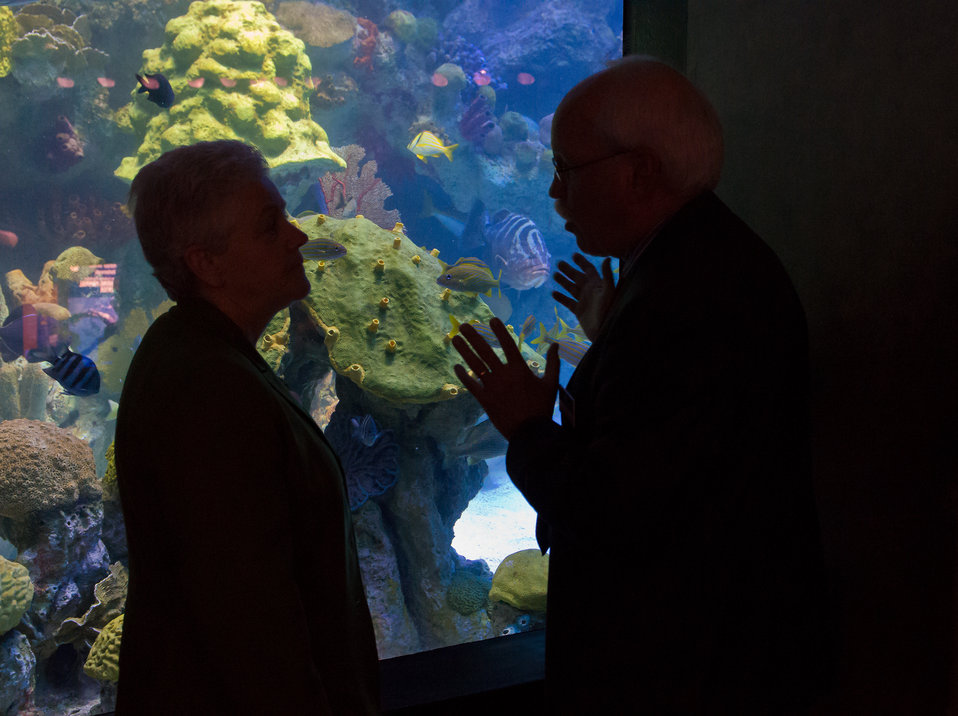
A Day In The Life of the EPA Administrator - April 22, 2014 11:41 am

Before her first event to celebrate Earth Day, McCarthy gets a quick behind-the-scenes tour of the New England Aquarium from Bud Ris, President and CEO.